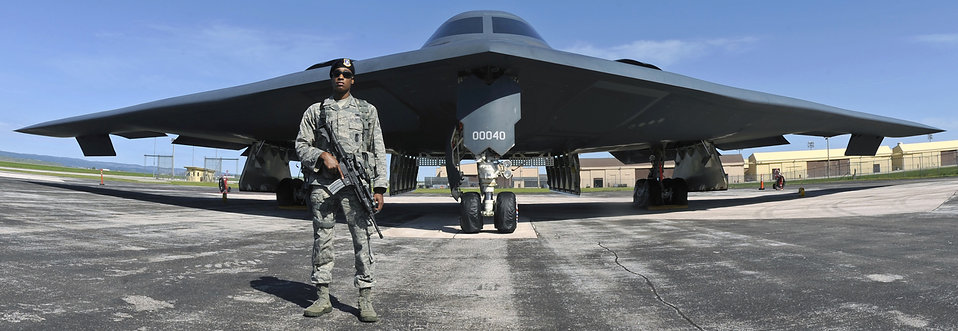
2011 Dakota Thunder air show

An Airman guards a B-2 Spirit June 4, 2011, during the 2011 Dakota Thunder air show at Ellsworth Air Force Base, S.D.